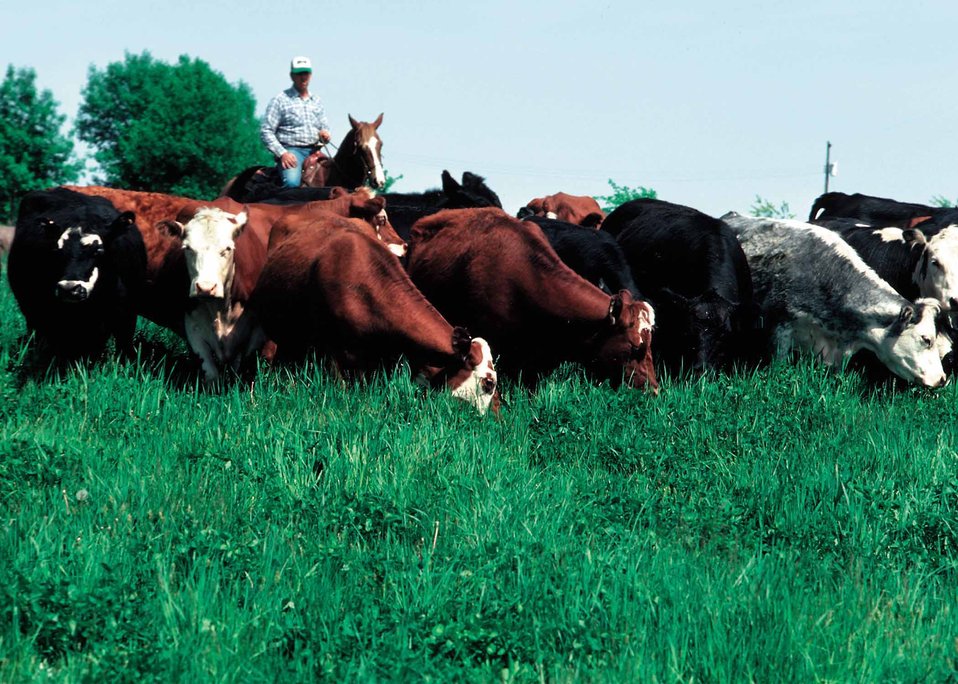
Cattle graze on a cool-season grass and legume pasture in southern Iowa.